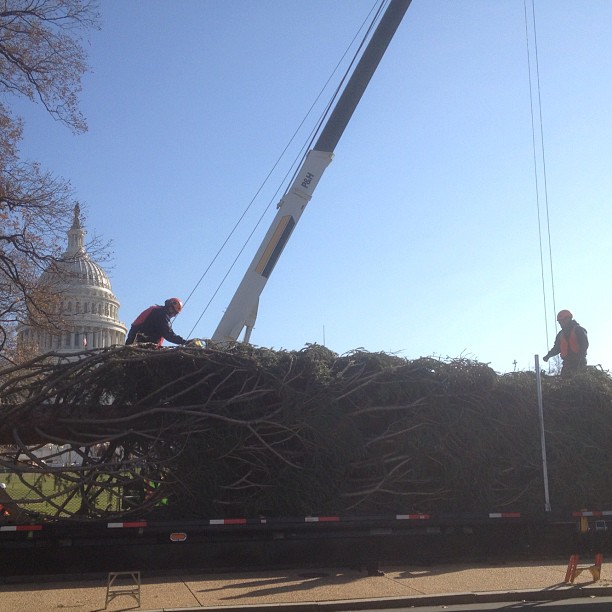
AOC arborists prepare to lift 65 ft Capitol Christmas tree.